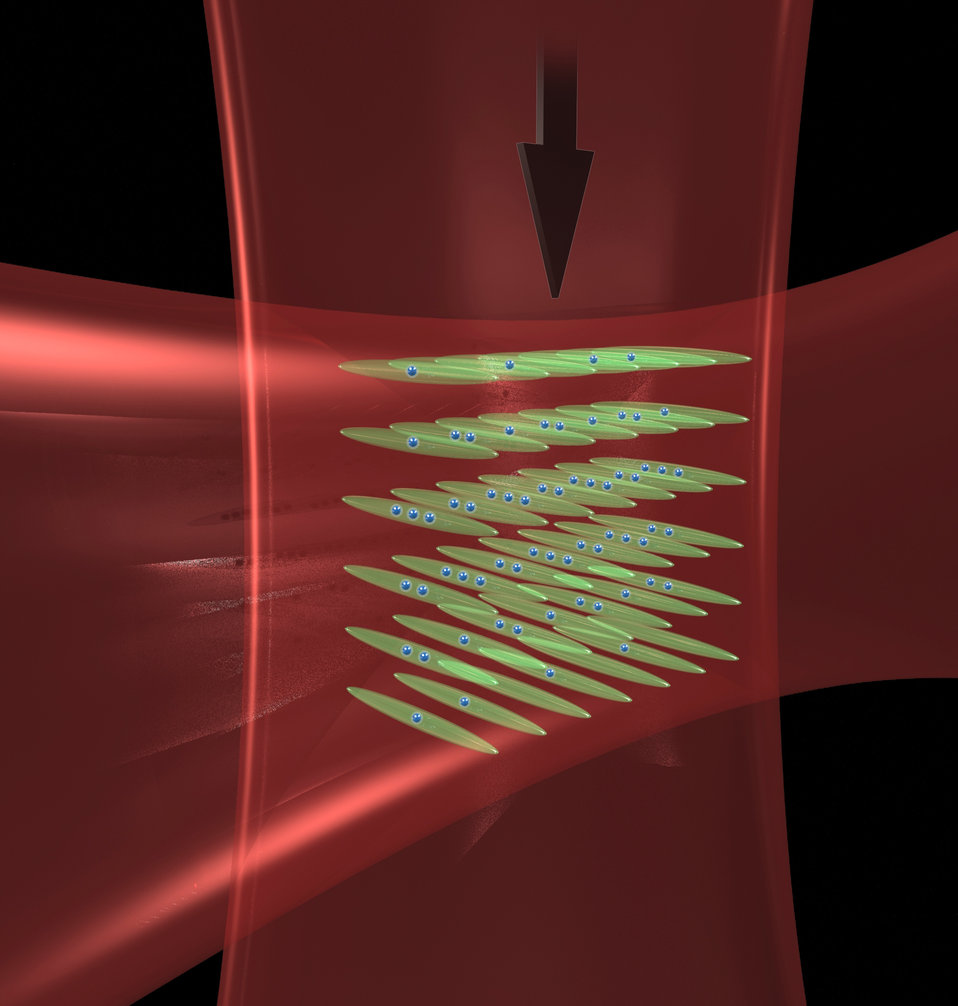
Atomic Clock; Optical Tubes

Intersecting laser beams create 'optical tubes' to pack atoms close together, enhancing their interaction and the performance of JILA's strontium atomic clock.